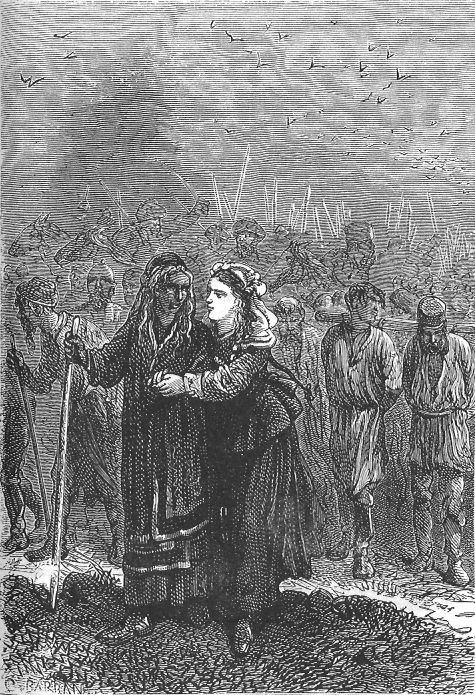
An illustration from the novel 'Michael Strogoff: The Courier of the Czar' by Jules Verne drawn by Jules Férat. Polski: Ilustracja powieści Juliusza Verne'a 'Michał Strogow, kurier carski' autorstwa Julesa Férata. Français : 'Michel Strogoff. Le courier du tzar', Jules Férat. Français : La jeune fille était là et l’aidait de son bras.